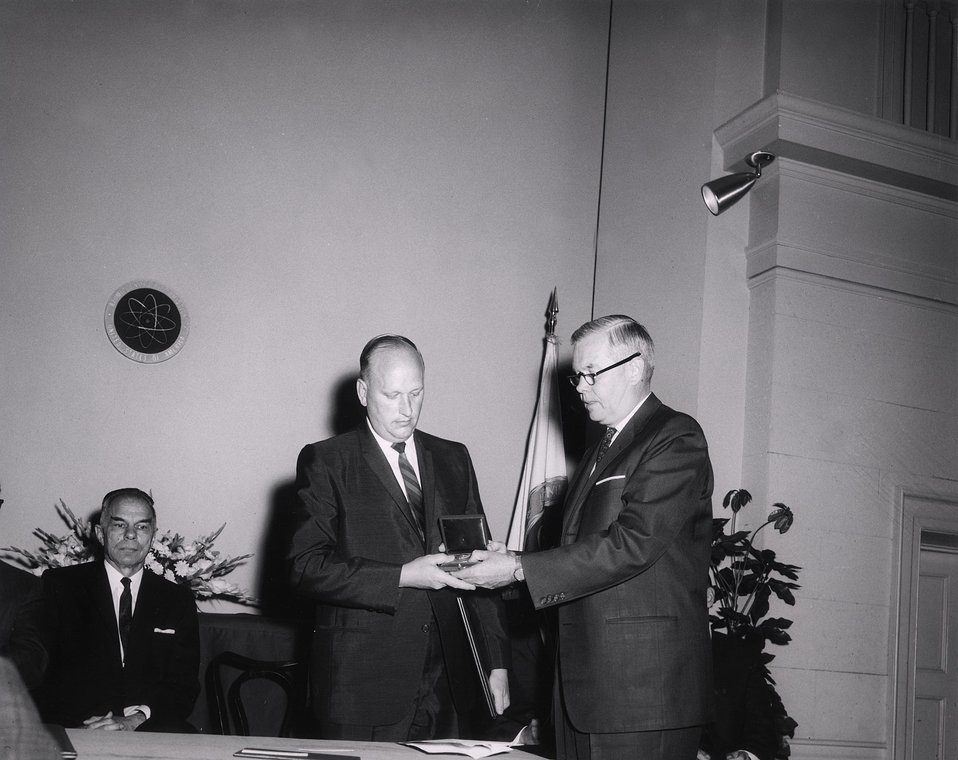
Seventh E.O. Lawrence Award Ceremony, April 27, 1966, Wash., D.C. L-R Chairman Seaborg, Mr. Vanstrum, Commissioner Tape.